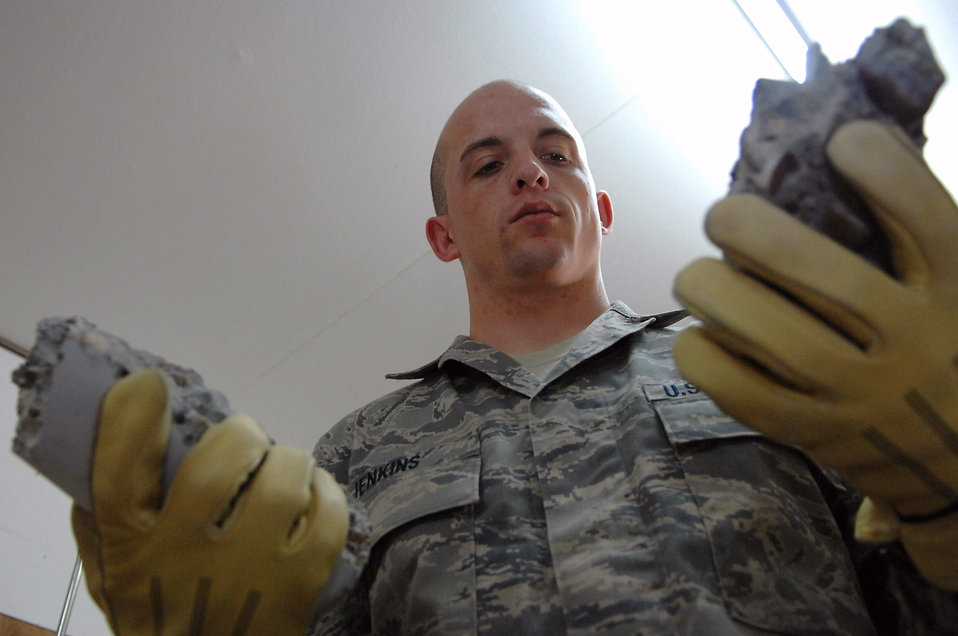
Under pressure

Staff Sgt. Jack Jenkins examines the broken pieces of a concrete cylinder sample taken from the new Housing 6 area shoppette foundation Feb. 21 at Balad Air Base, Iraq. These tests confirm aircraft or buildings can be put on concrete surfaces without the concrete cracking or sinking. Sergeant Jenkins is a 332nd Civil Engineer Squadron engineering assistant deployed from Ellsworth Air Force Base, S.D.